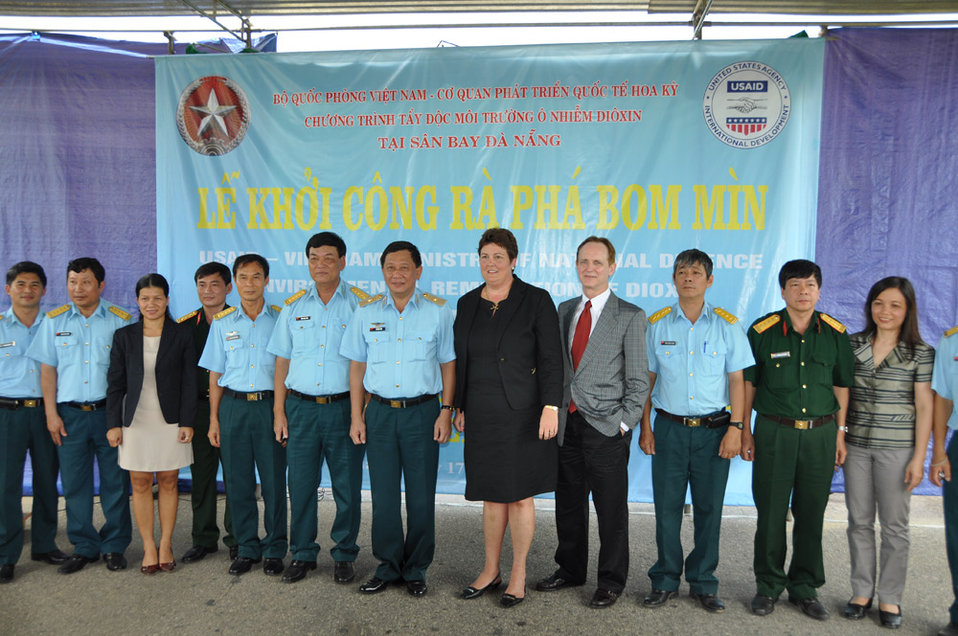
UXO clearance ceremony, June 17, 2011, in Danang, Vietnam.